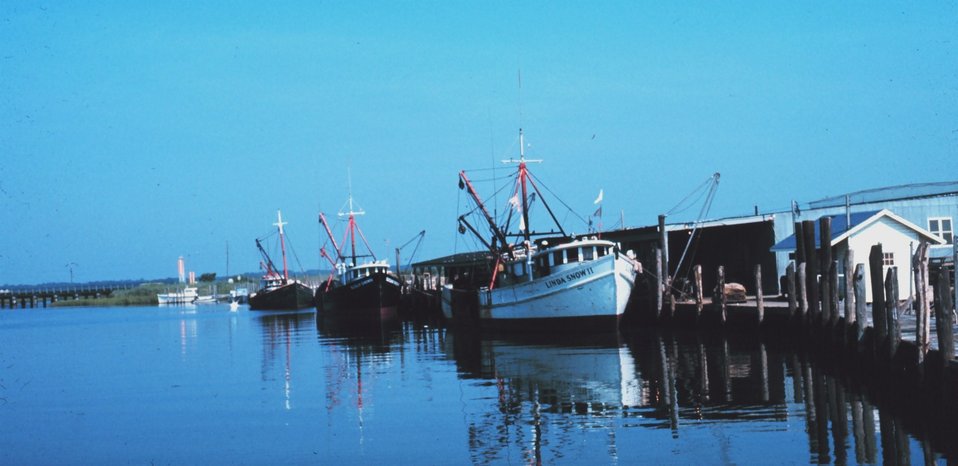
The commercial fishing piers at Cape May